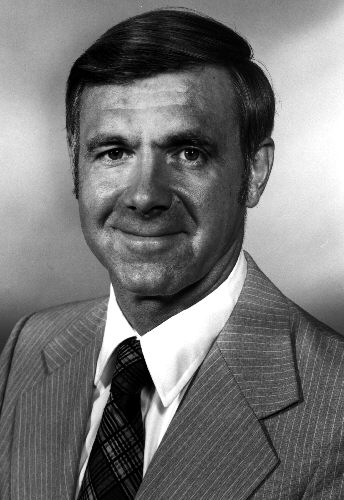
William H. Foege, M.D., M.P.H., Director, CDC